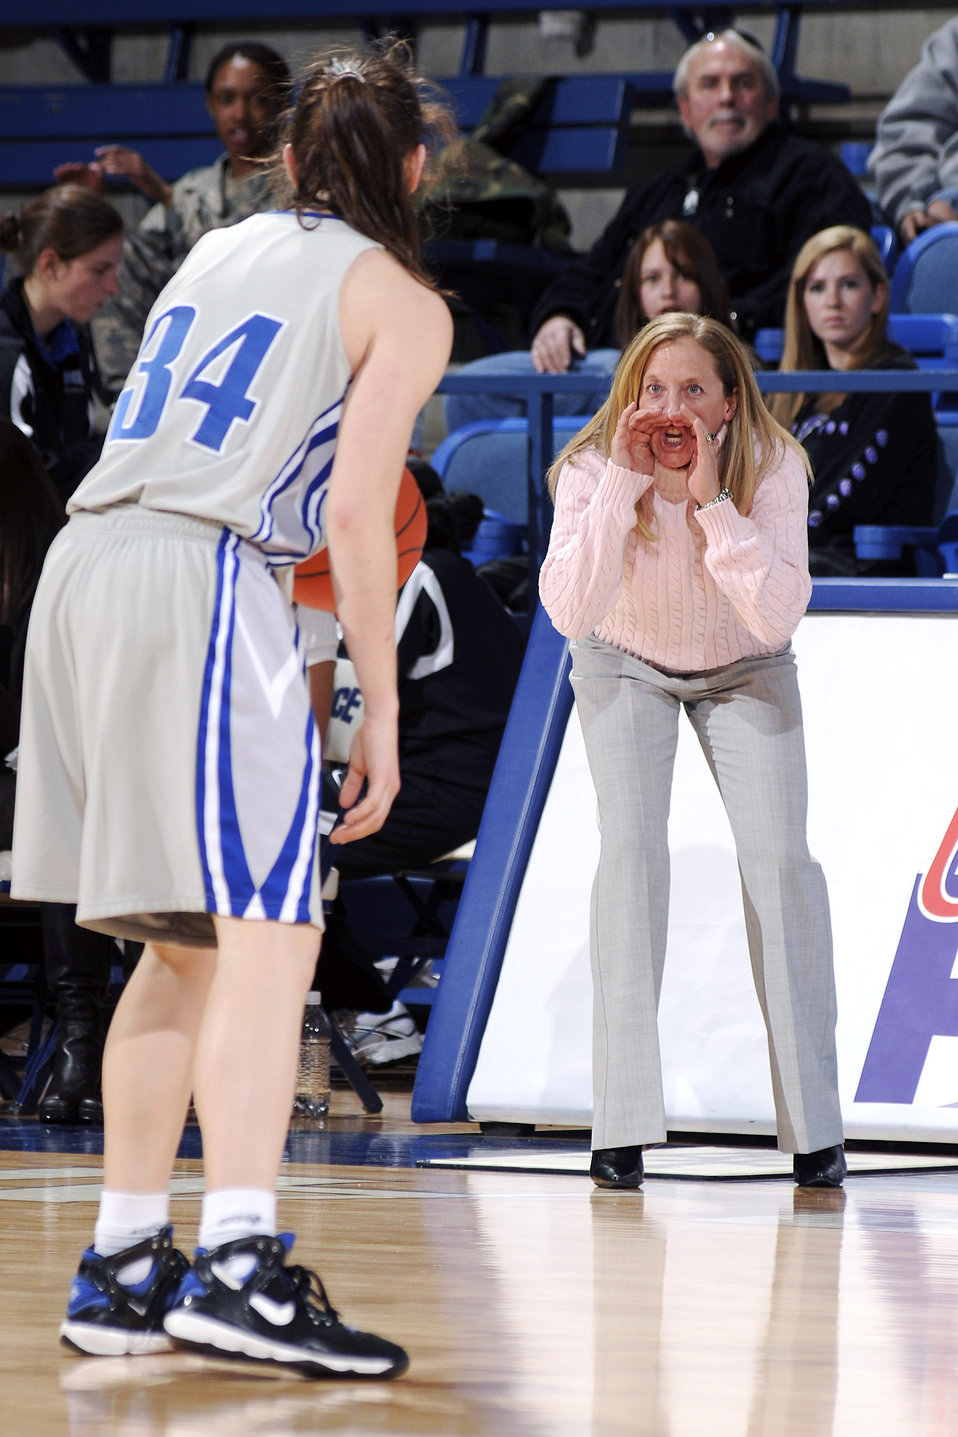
Aiming high

U.S. Air Force Academy women's head coach Ardie McInelly yells directions to senior Brooke Cultra during the 73-39 loss against the New Mexico Lobos Jan. 9 at the Academy in Colorado. Cultra added nine points and nine rebounds, along with two blocked shots. The Falcons return to action Jan. 14 at Utah.